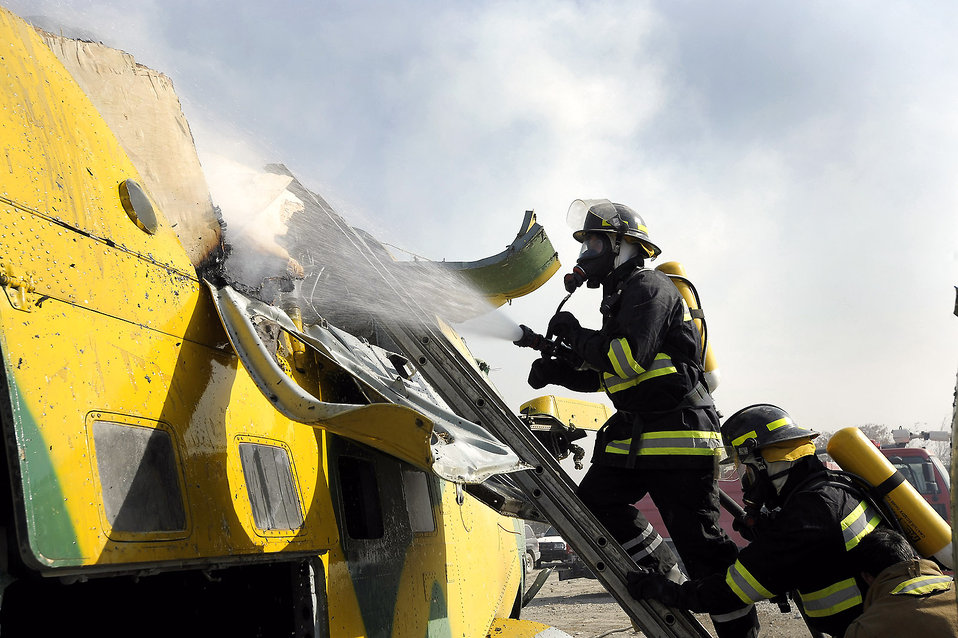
Airman helps shape future Afghan firefighters

Airmen from the 438th Air Expeditionary Wing douse a fire on a helicopter during an open house at the Afghan Joint Fire Academy. The open house showcased training exercises used at the academy to members of the wing and highlighted progress made by the Afghan firefighters during the past nine months.